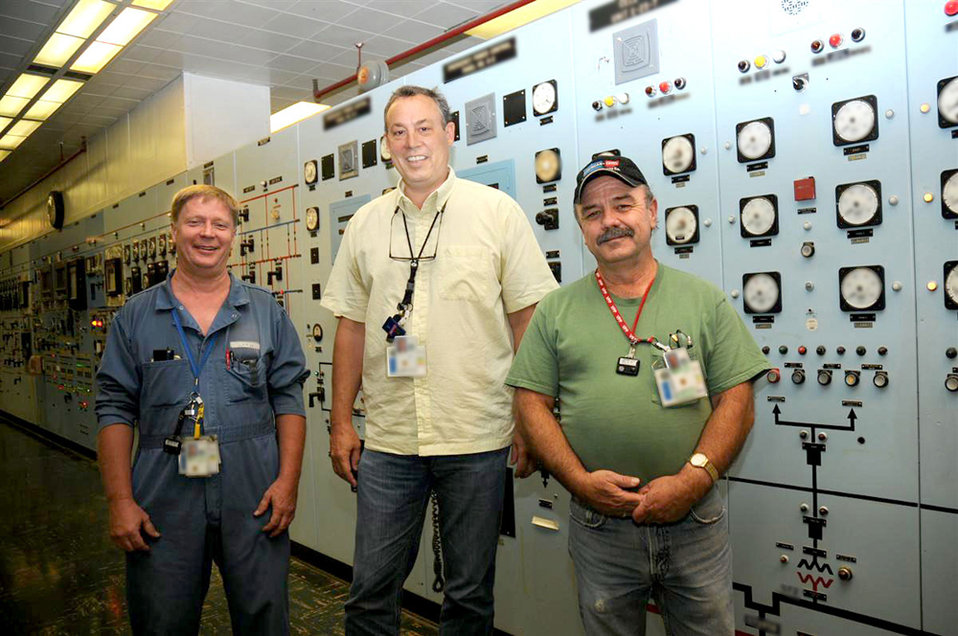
EM to Proceed with Demolition Following Completion of Cascade Cleanout Operations

X-326 Facility Manager Jack Tully, left to right, DOE Site Lead Joel Bradburne and Operator Russ Nickell stand in the local control room after the last processing equipment that had been operating in the uranium enrichment cascade at the Portsmouth site in Piketon was shut down.

EM and Ohio Environmental Protection Agency are reviewing decontamination and decommission (D&D) approaches for three buildings that housed the equipment for uranium enrichment that was shut down this spring after operating for 57 years.